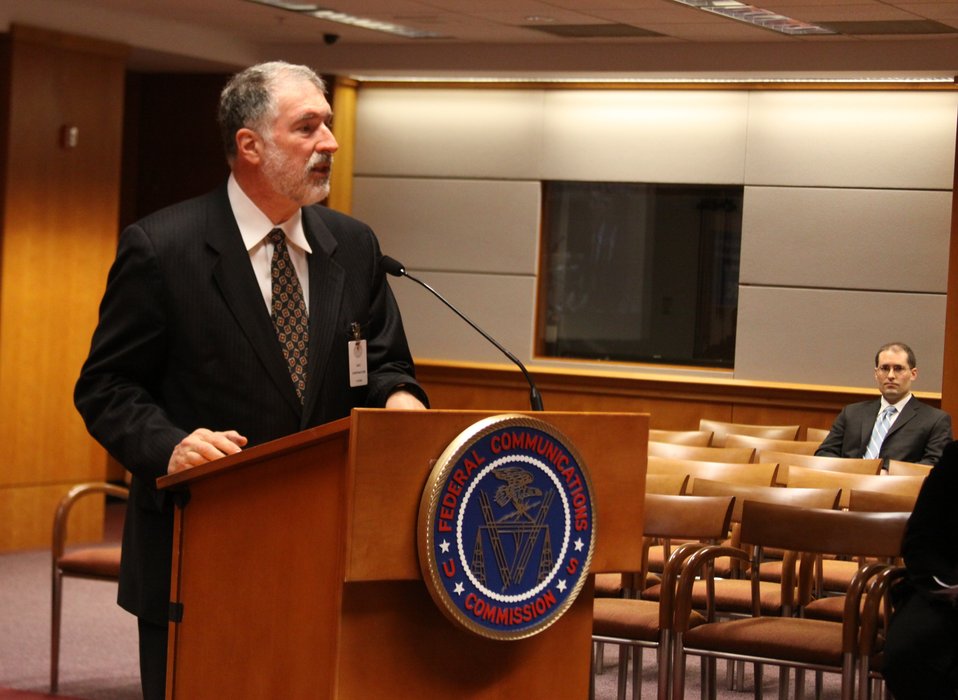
March 27, 2013 Gigabit City Challenge: Broadband Networks Workshop